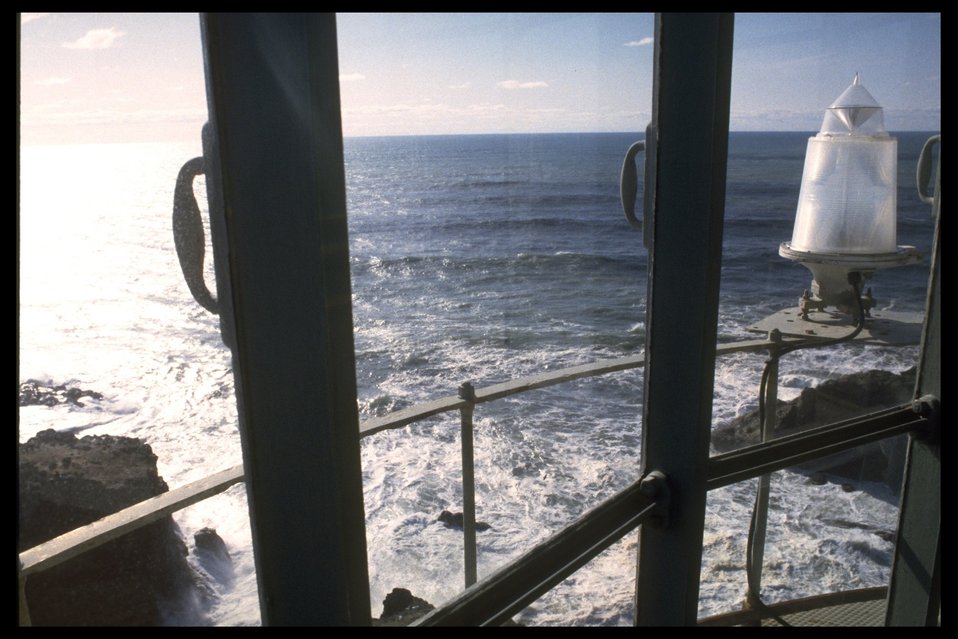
View from Yaquina Head Lighthouse lens area.